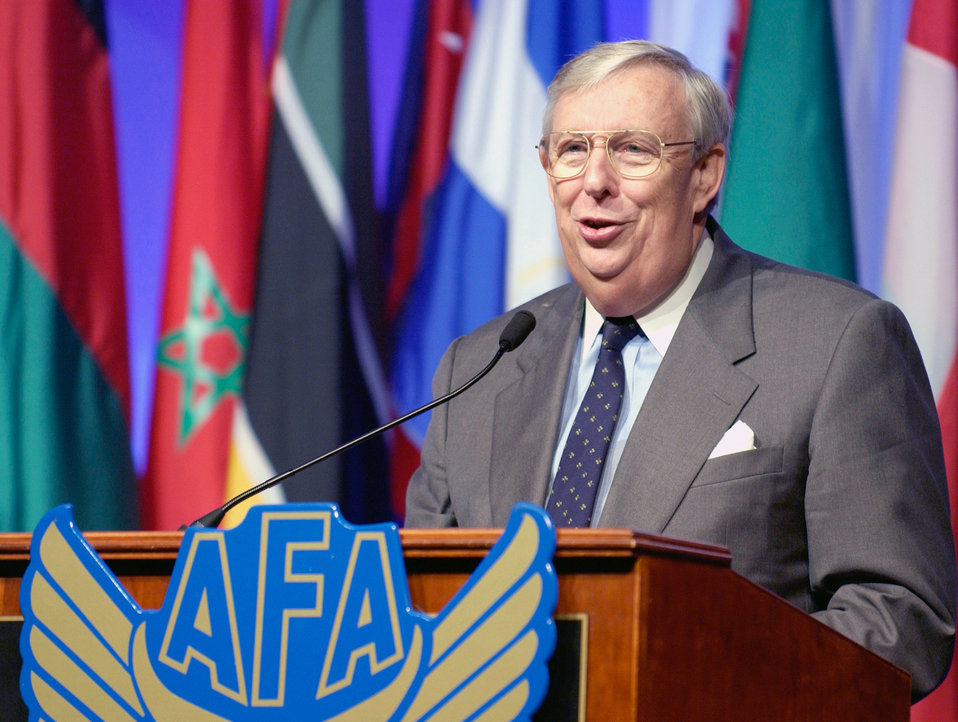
Air Force Association's annual convention

WASHINGTON (AFPN) -- Secretary of the Air Force Dr. James G. Roche addresses the audience during the Air Force Association's annual convention here. Included in the audience were more than 90 foreign air chiefs who are attending the Global Air Chief's Conference running concurrently with the AFA convention.